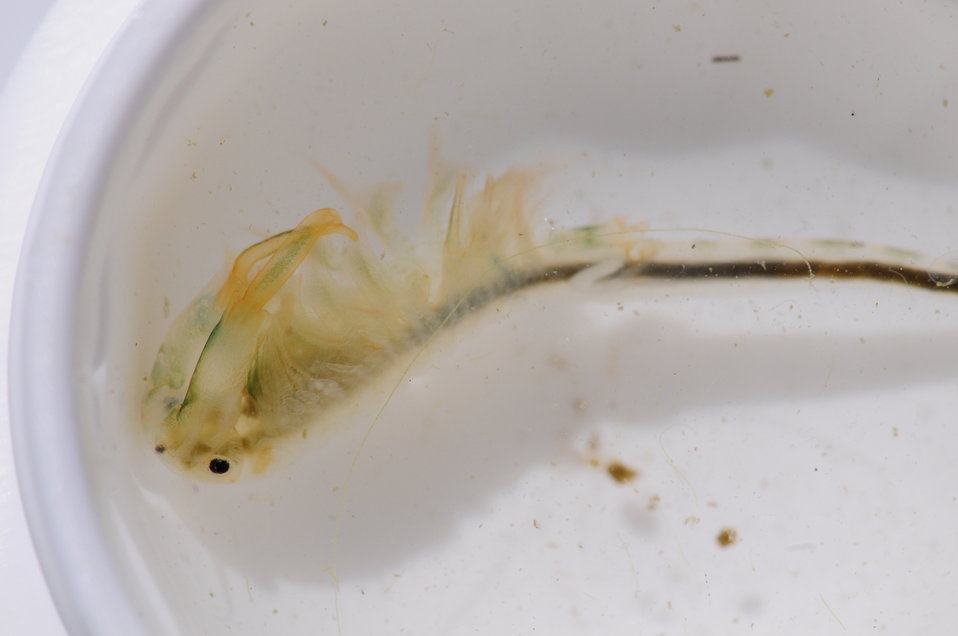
Vernal Pool fairy shrimp